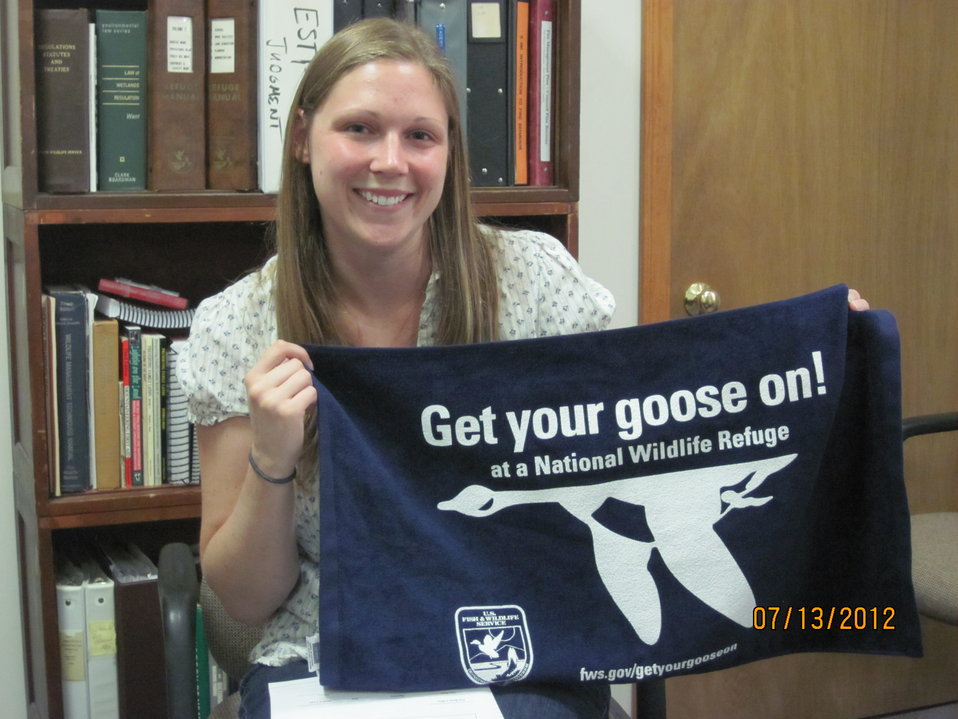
Get Your Goose On!

Masters student Katie Ehlers Gets Her Goose On during a break from working on her thesis.